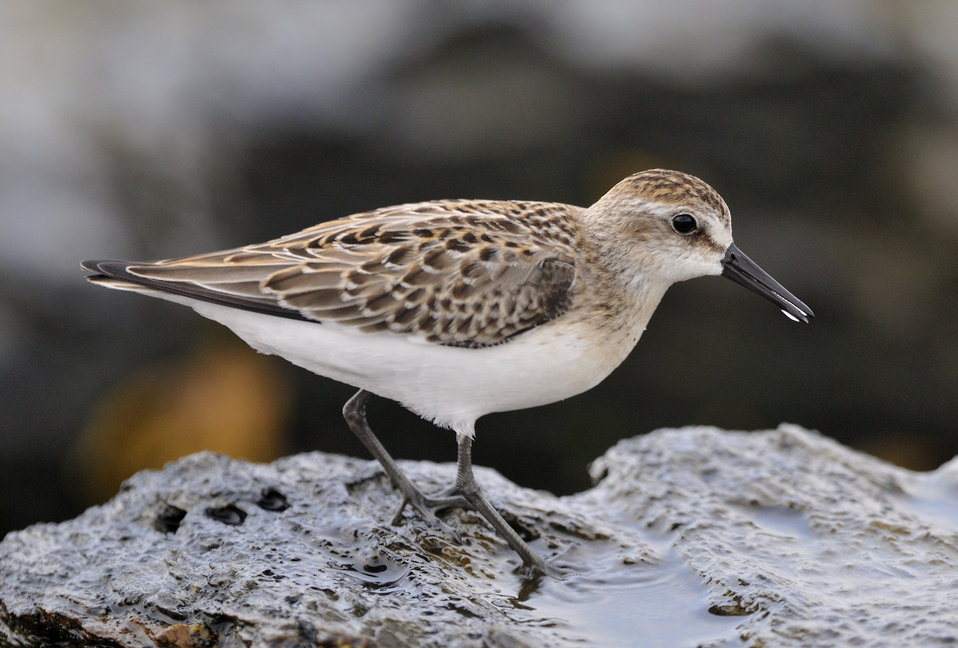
Semipalmated Sandpiper

Photographed at Beavertail State Park in Jamestown, RI.